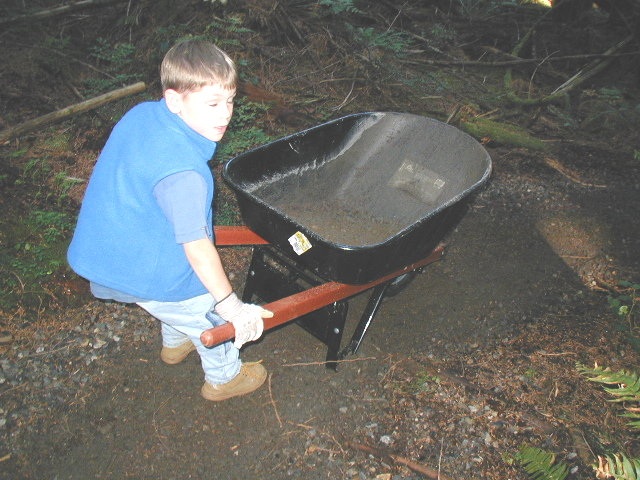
Gravel was loaded.....and hauled to be spread on the trail